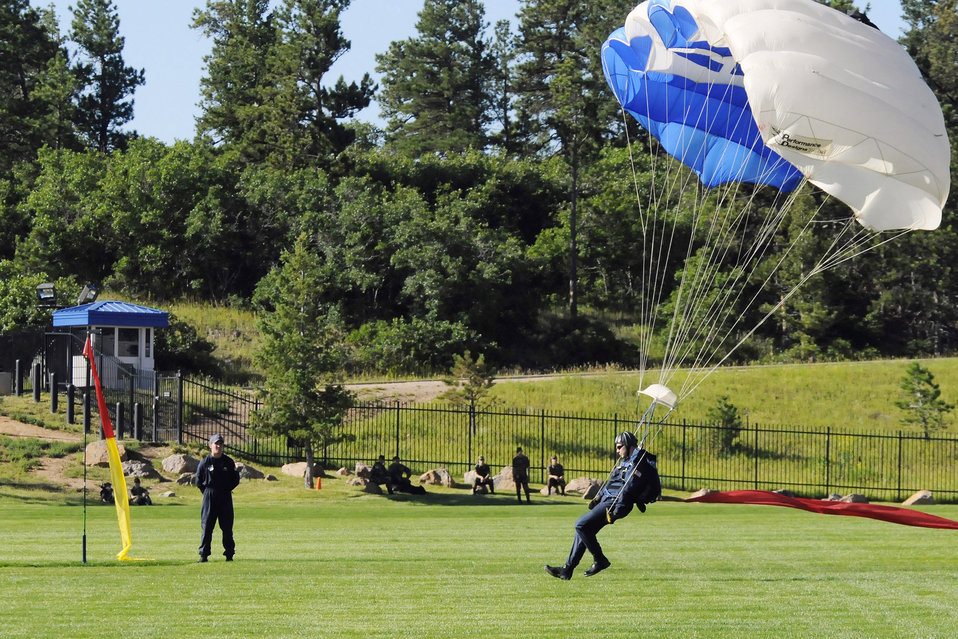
Academy acceptance parade

U.S. Air Force Academy Cadet 1st Class Brett Killion parachutes onto Stillman Field to open the Acceptance Parade Aug. 5 at the Academy in Colorado. The parade marks the official end of Basic Cadet Training and formally welcomes the new class into the cadet wing.